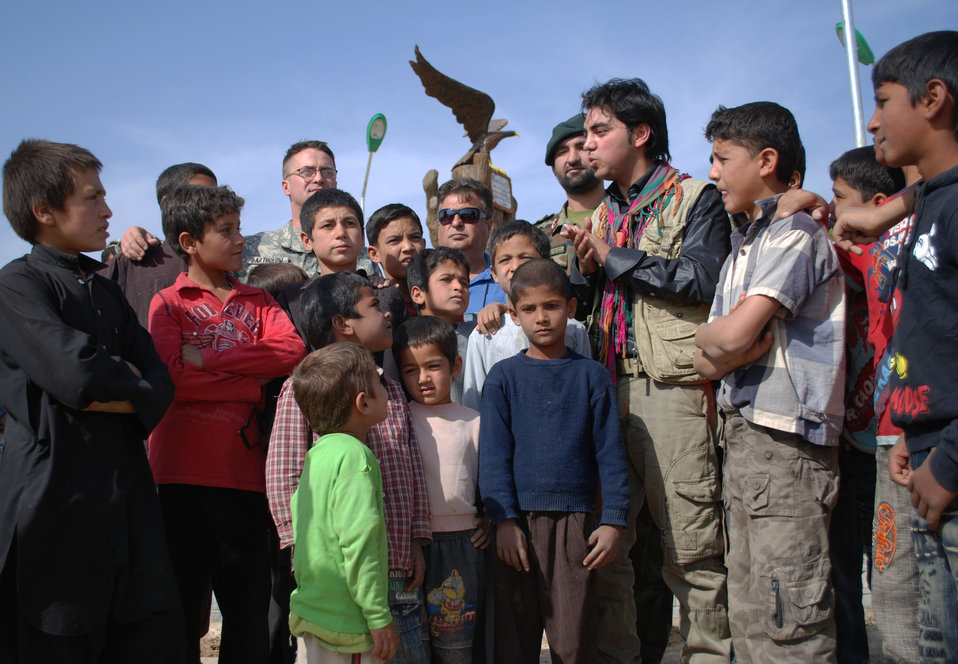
'On the Road' in Balkh Province